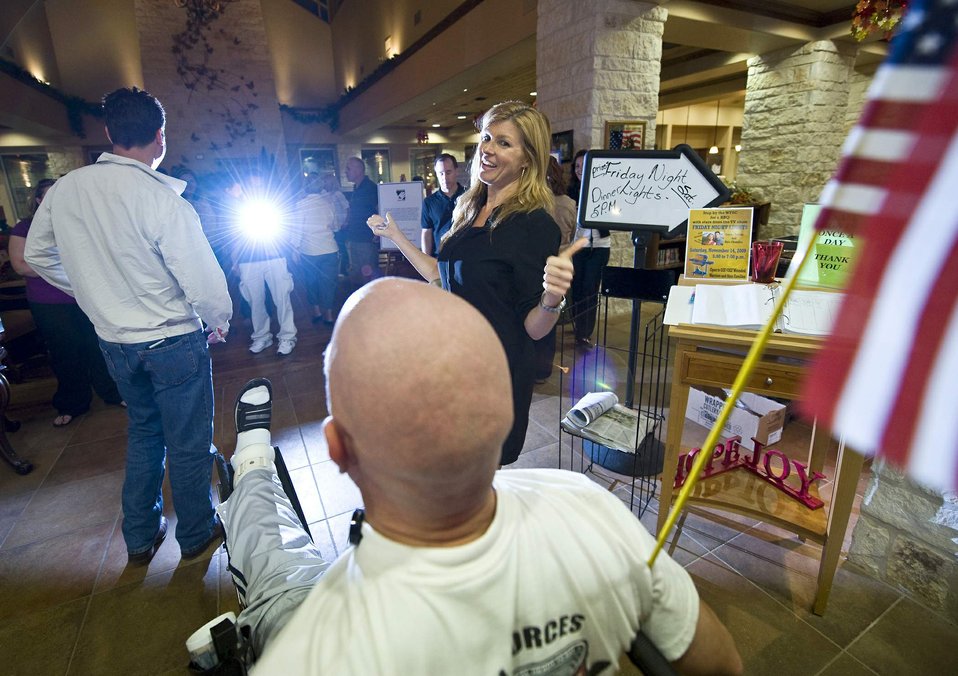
'Friday Night Lights' actors thank wounded warriors